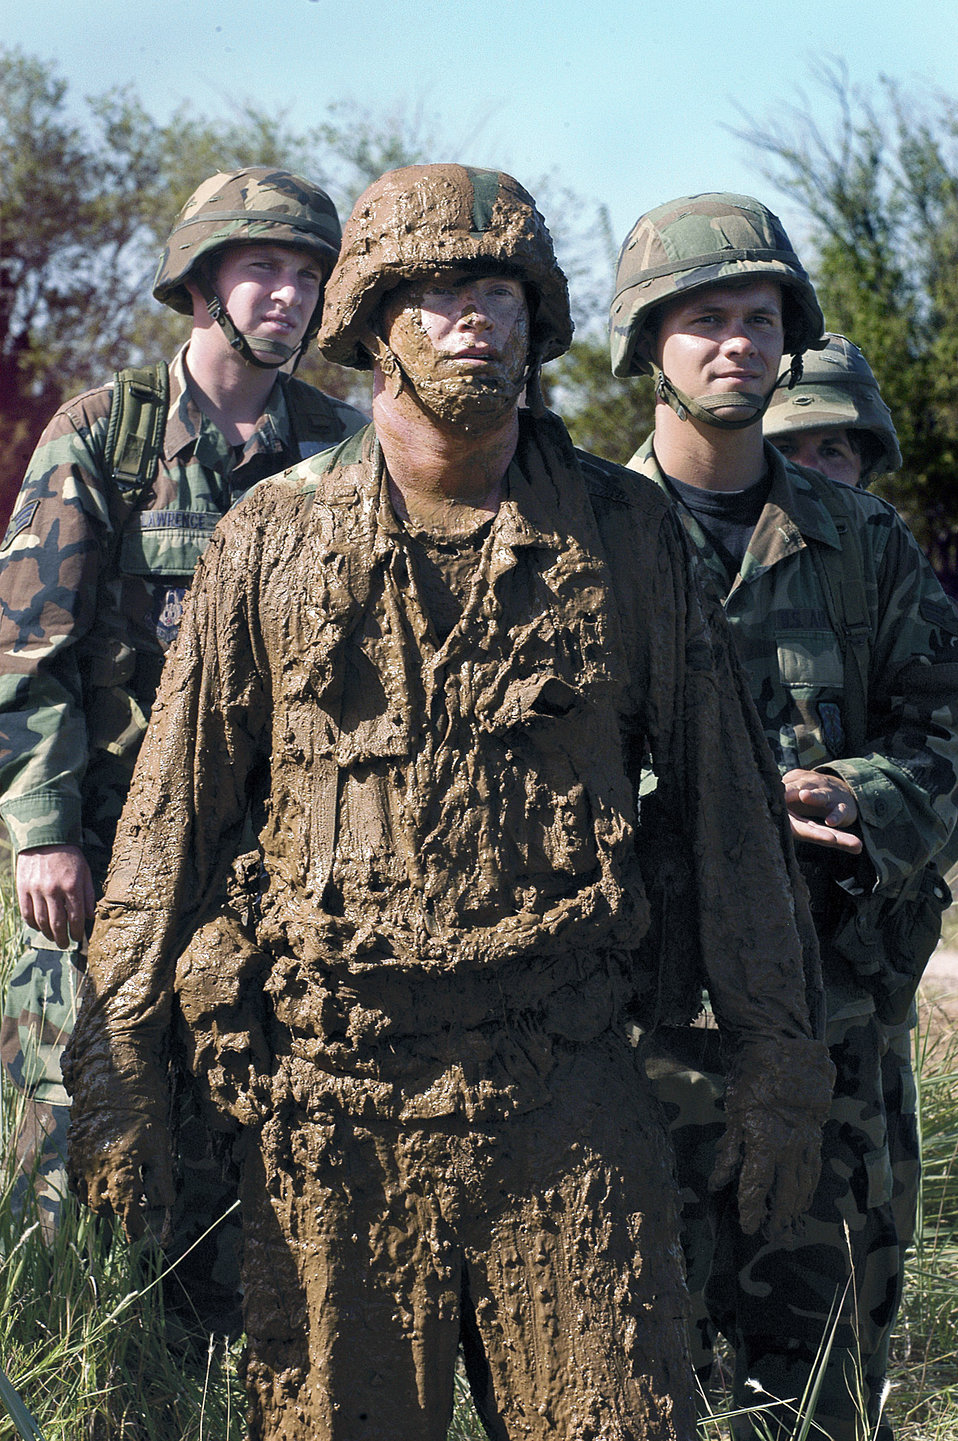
He needs to come clean

After practicing low and high crawl techniques through a mud pit in the Glenwood Training Area at Tinker Air Force Base, Okla., Aug. 10, Senior Airman Jason Decker catches his breath and watches the next team. Senior Airman Paul Lawrence (left) and Airman 1st Class Samuel Newhouse wait their turn.